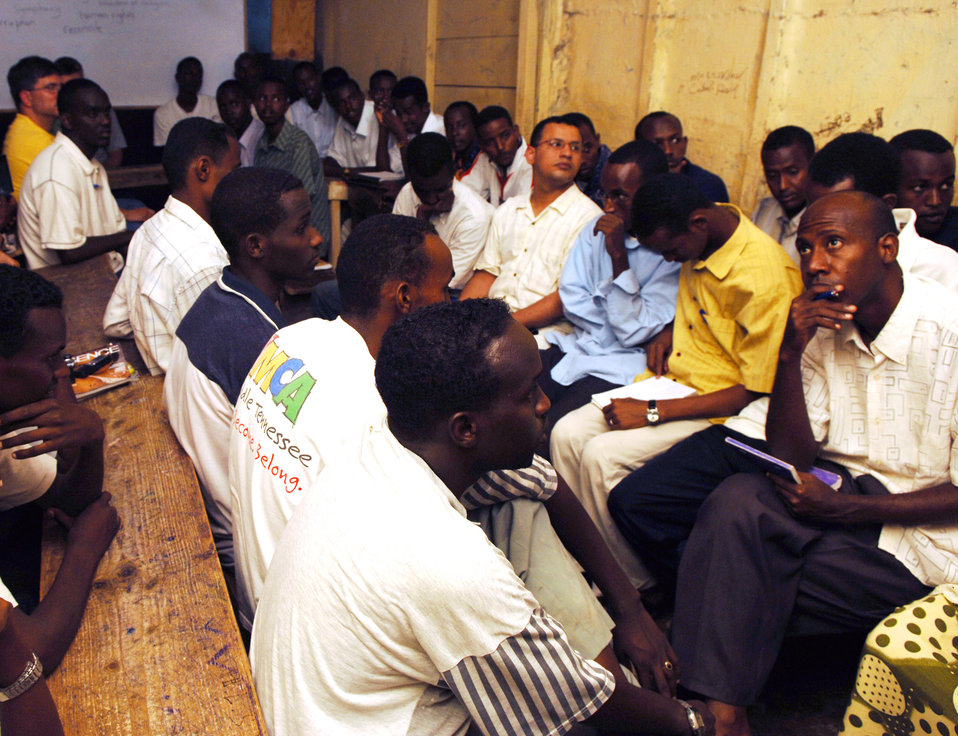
Airmen help Djiboutians learn English

Djiboutians crowd a classroom to participate in an English discussion group session April 5 in Djibouti City, Djibouti. The U.S. Embassy started the program, but rely on support from servicemembers stationed on Camp Lemonier to make the program a success. The English discussion groups are just one of the programs Americans use to foster community relations with their host nation.